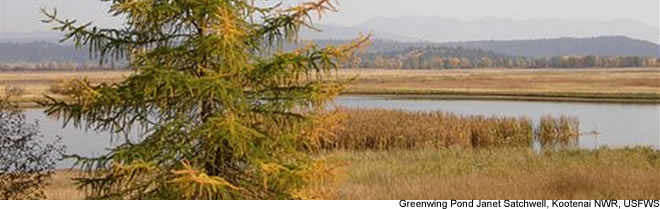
Greenwing Pond - Kootenai NWR

Ponds are just one type out a wide variety of habitat types found at Kootenai NWR.